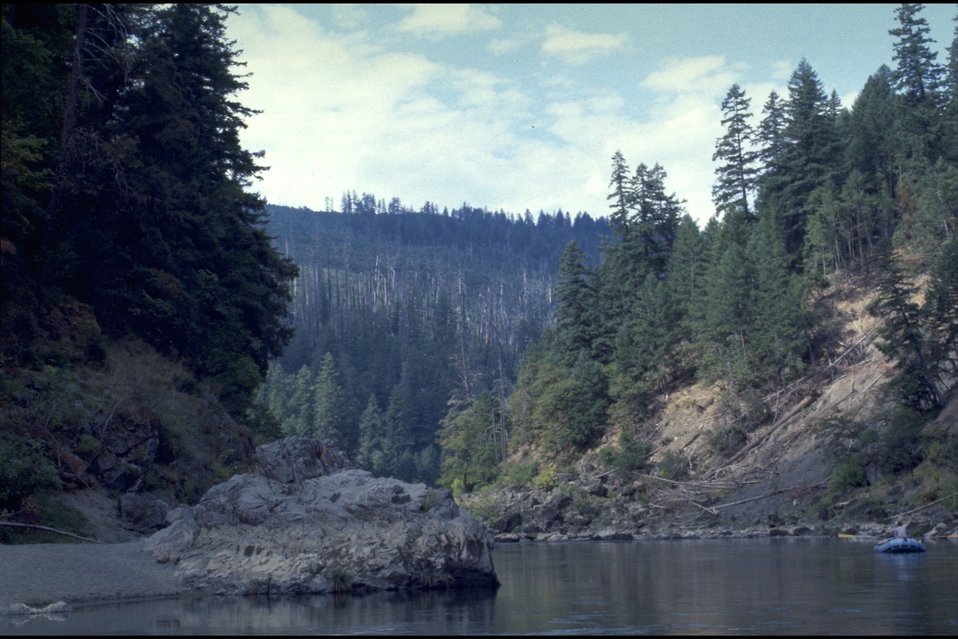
Quail Creek, wild section of the Rogue River.